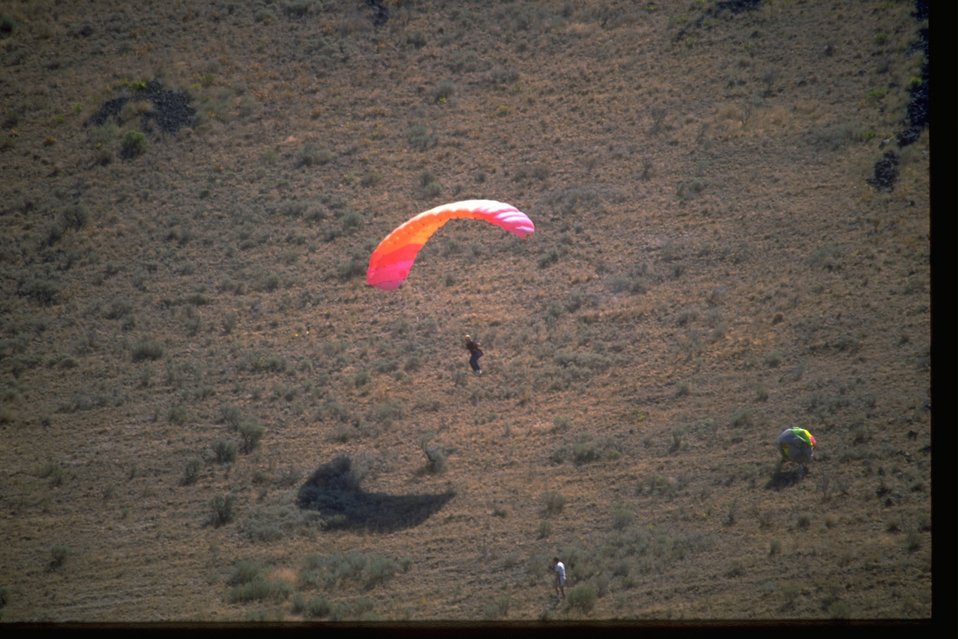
Paragliding in Yakima River Canyon